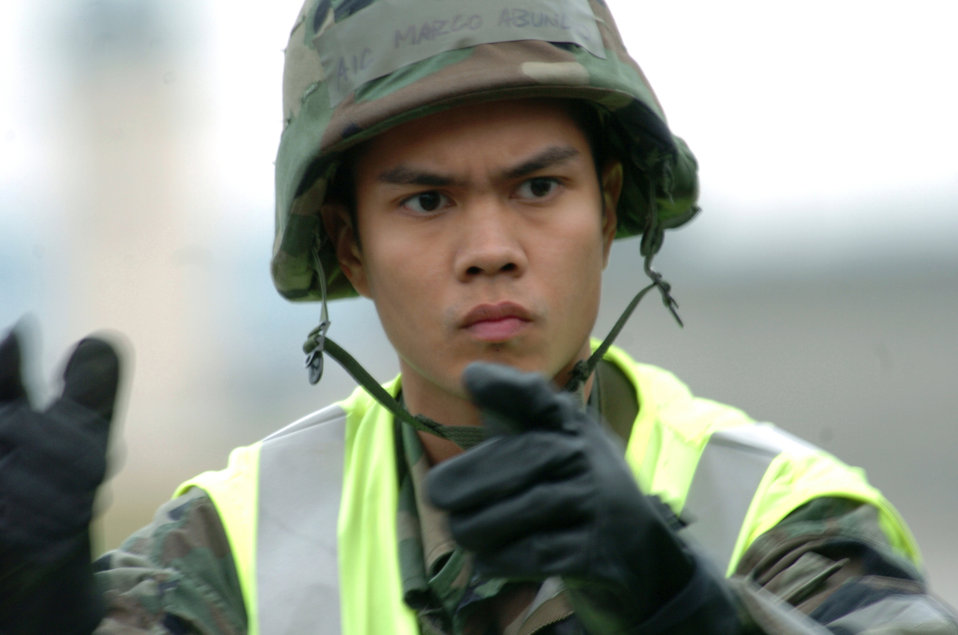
ORE you ready?

YOKOTA AIR BASE, Japan -- Airman 1st Class Marco Abundo marshals a forklift on the flightline during an operation readiness exercise here Nov. 8. The exercise tested the 374th Airlift Wing's command and control, operations and mission support functions. Airman Abundo is assigned to the 374th Medical Group.